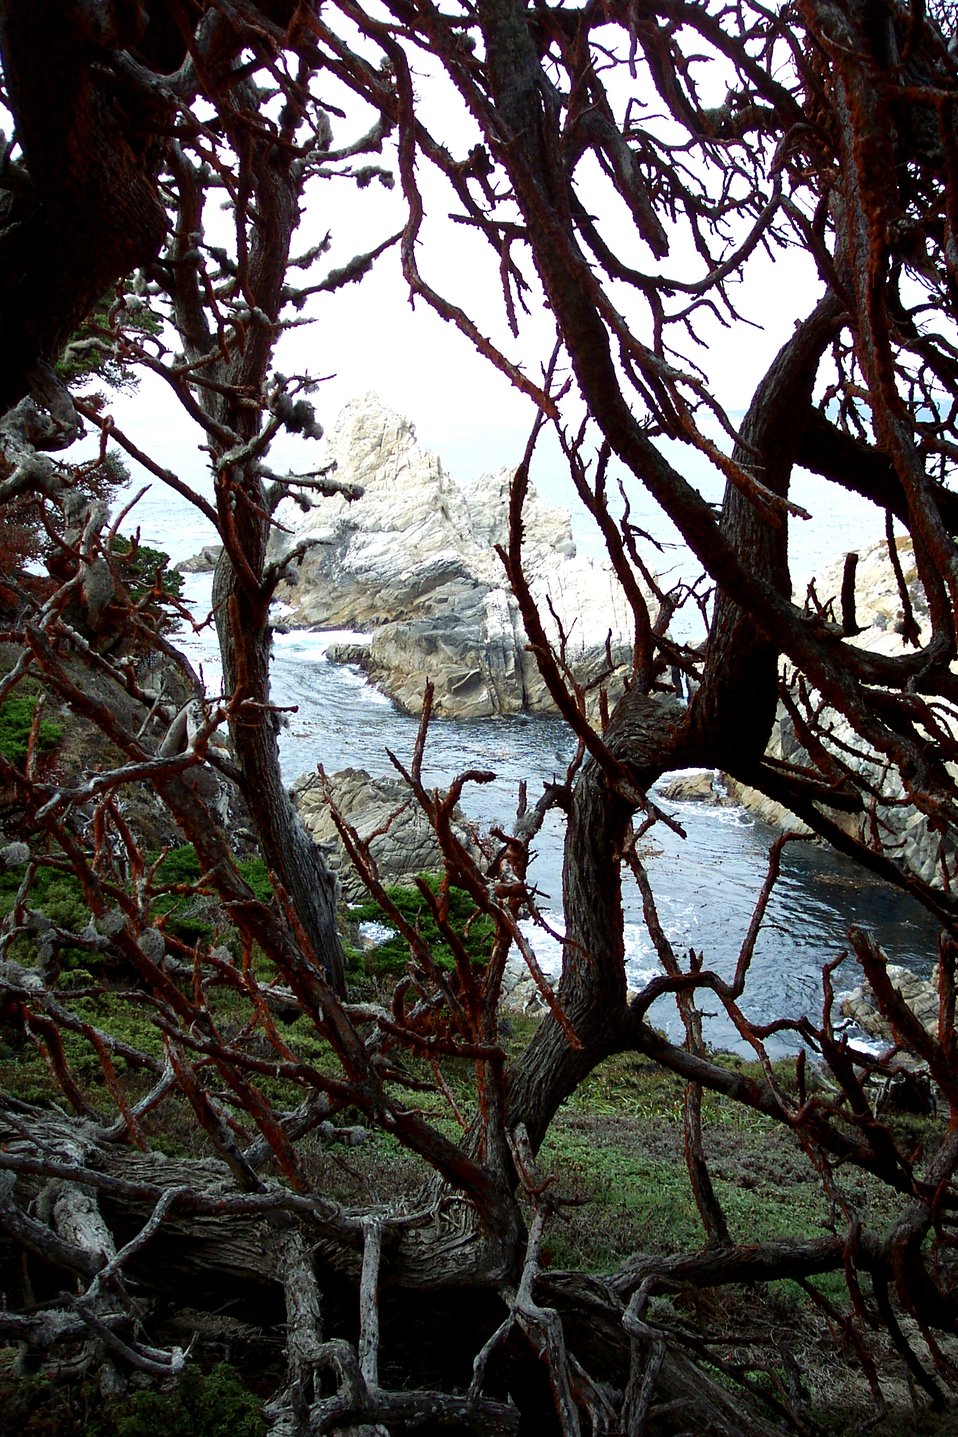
A magnificent headland at Point Lobos as seen through Monterey Cypress, Cupressus macrocarpa. The orange algae growing on the trees is Trentepohlia aurea v. polycarpa, a green alga which is rich in beta carotene. This algae is non-parasitic and generally grows on the side closest to salt spray.